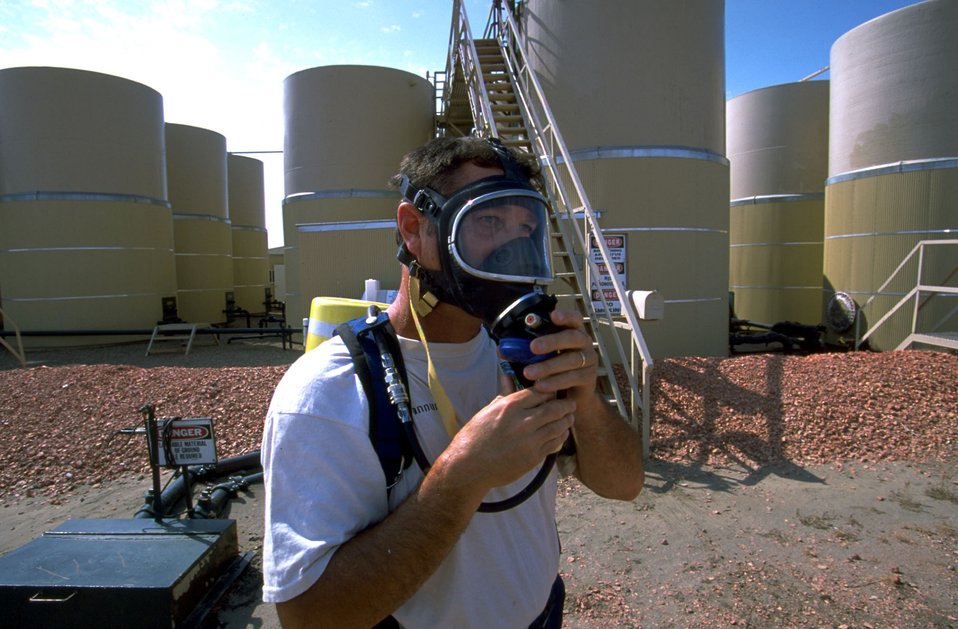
BLM petroleum engineering technician wearing self-contained breathing apparatus.